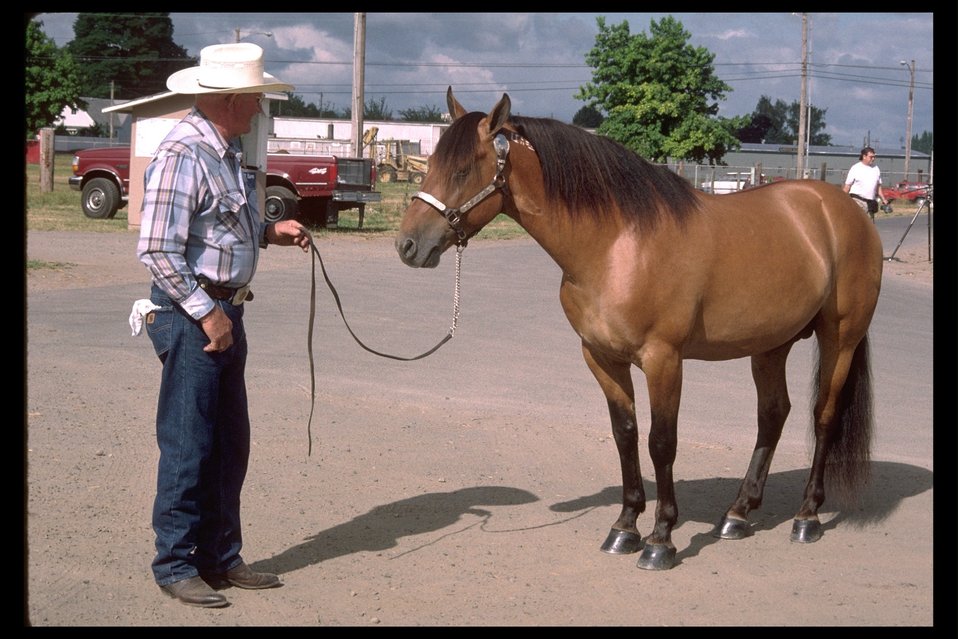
Proud adopter, Chuck John, shows off his adopted Kiger Mustang in Longview, WA adoption and horse show.